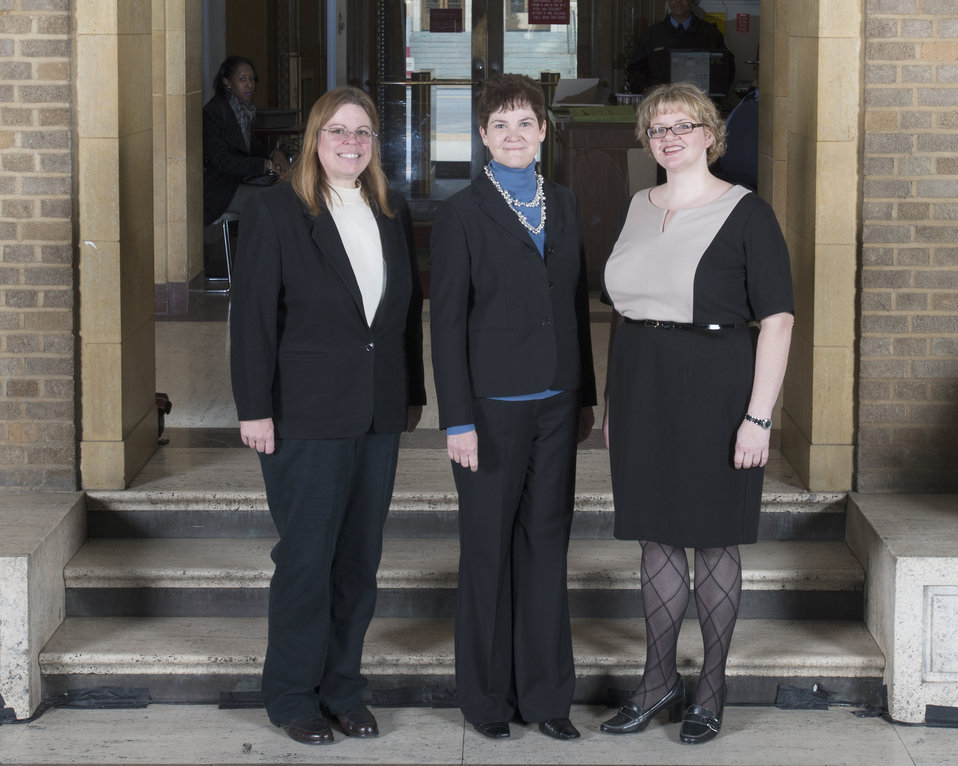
Agriculture Deputy Secretary Krysta Harden stands with the Bovine Tuberculosis Genotyping Team, Animal and Plant Health Inspection Service (APHIS) from Ames, IA on the patio at the U.S. Department of Agriculture (USDA) in Washington, D.C. on Wednesday, Dec. 11, 2013. The team received the Secretary’s Honor Award for implementing whole genome sequencing to increase the efficiency and cost-effectiveness of the bovine tuberculosis eradication program and position USDA to better serve its stakeholders.